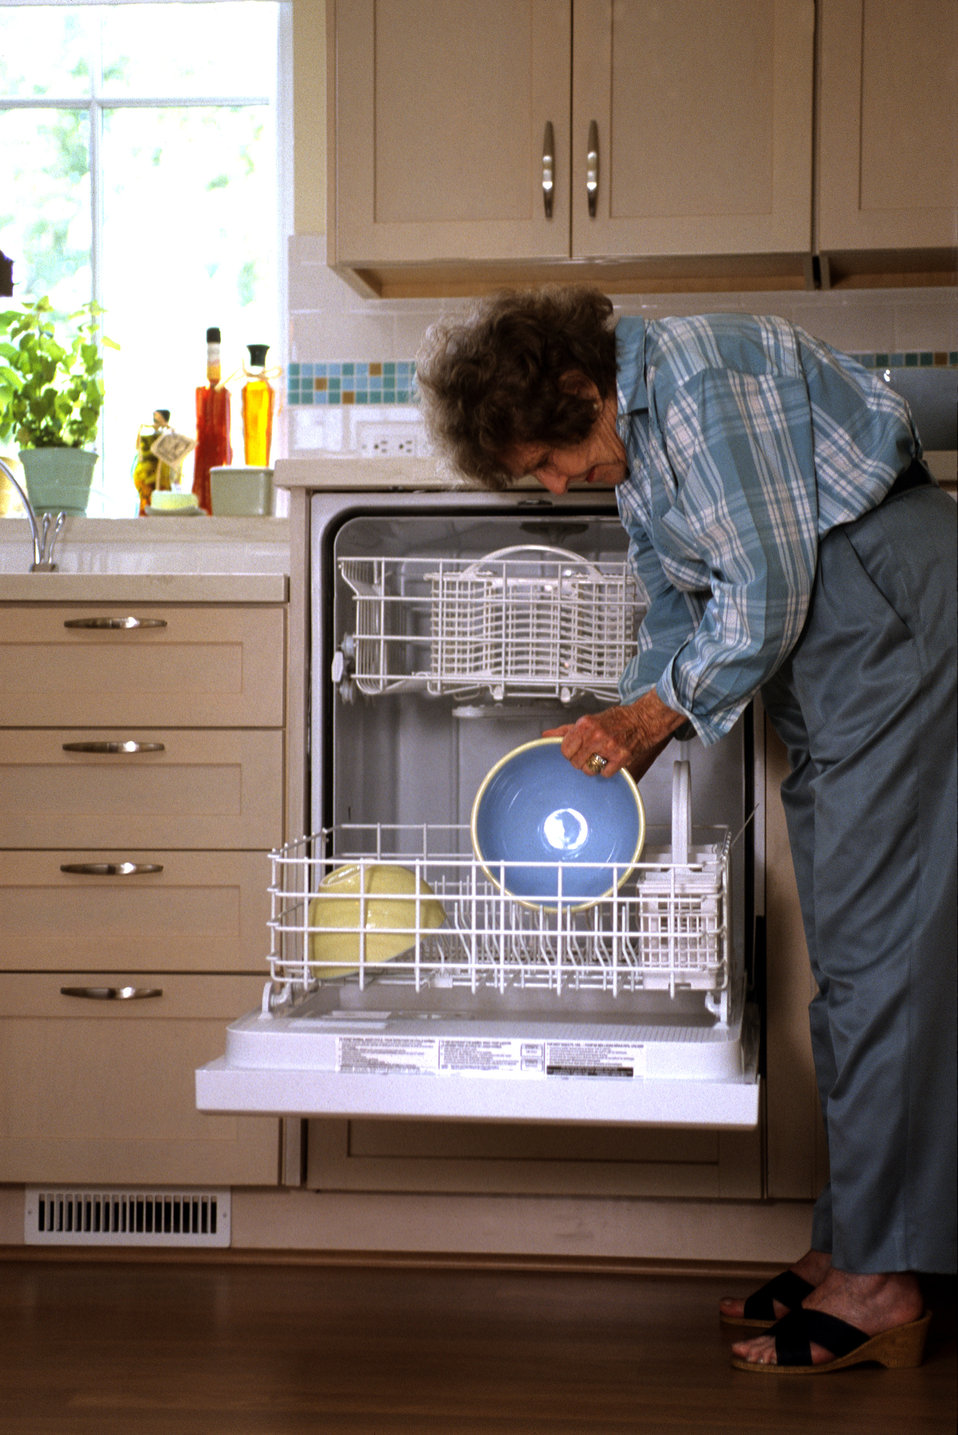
This 2000 image depicted a universally-designed, raised dishwasher that was being loaded by an elderly woman, and though she was bent over, seemed to be filling the appliance in an effortless manner. Dishwashers installed this way raise the storage area up within reach of people who use wheelchairs, as well as those such as this woman, who might have difficulty in bending down to the level of conventionally installed appliances.